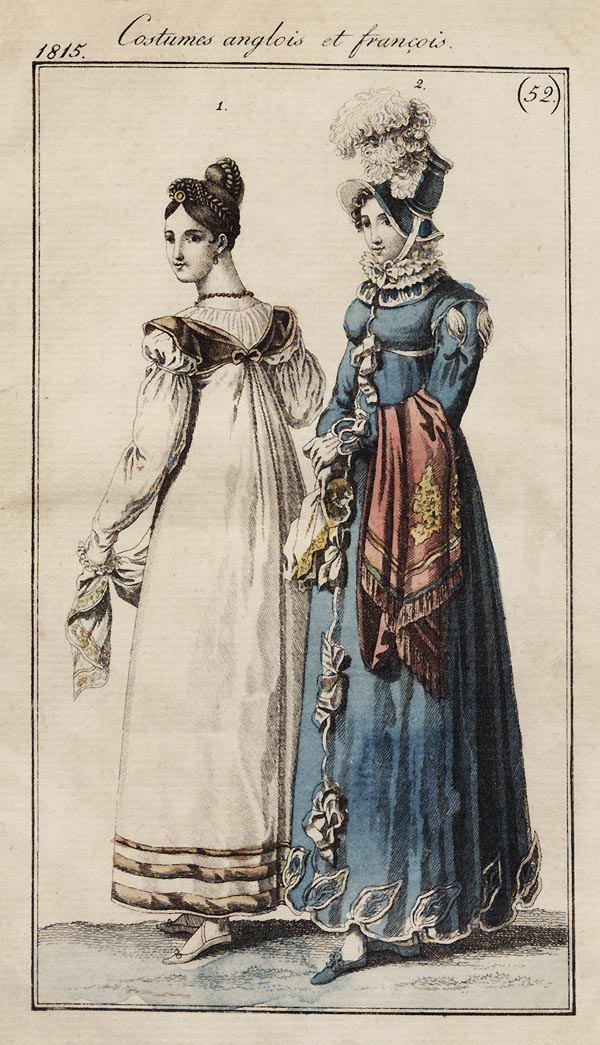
Fashion plate of English and French costumes for 1815